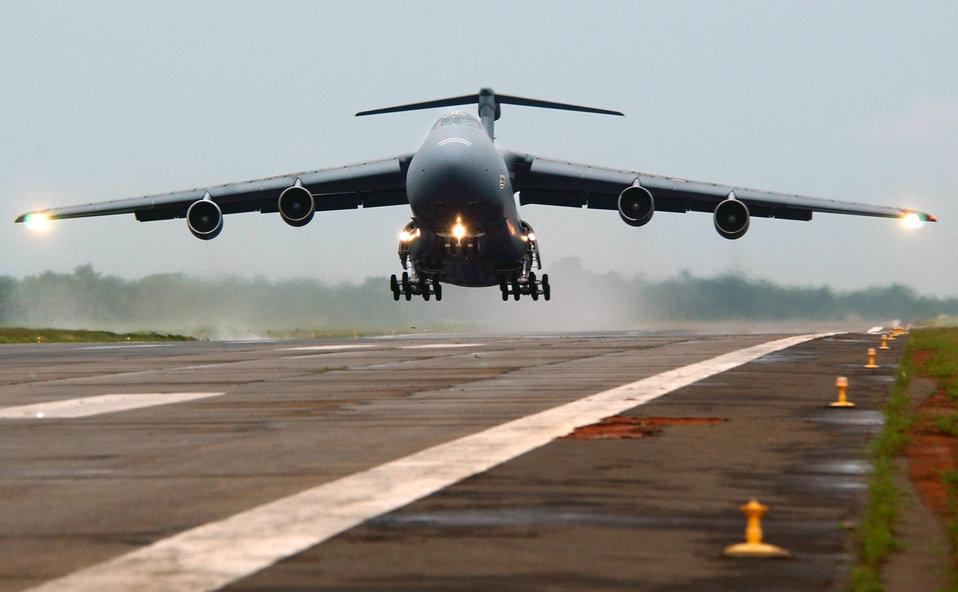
Galaxy bound for Iceland

LUNGI, Sierra Leone -- A C-5 Galaxy, with the 301st Airlift Squadron, Travis Air Force Base, Calif., departs for Naval Air Station Keflavik, Iceland, carrying 398th Air Expeditionary Group personnel and equipment that have been supporting efforts in Liberia.